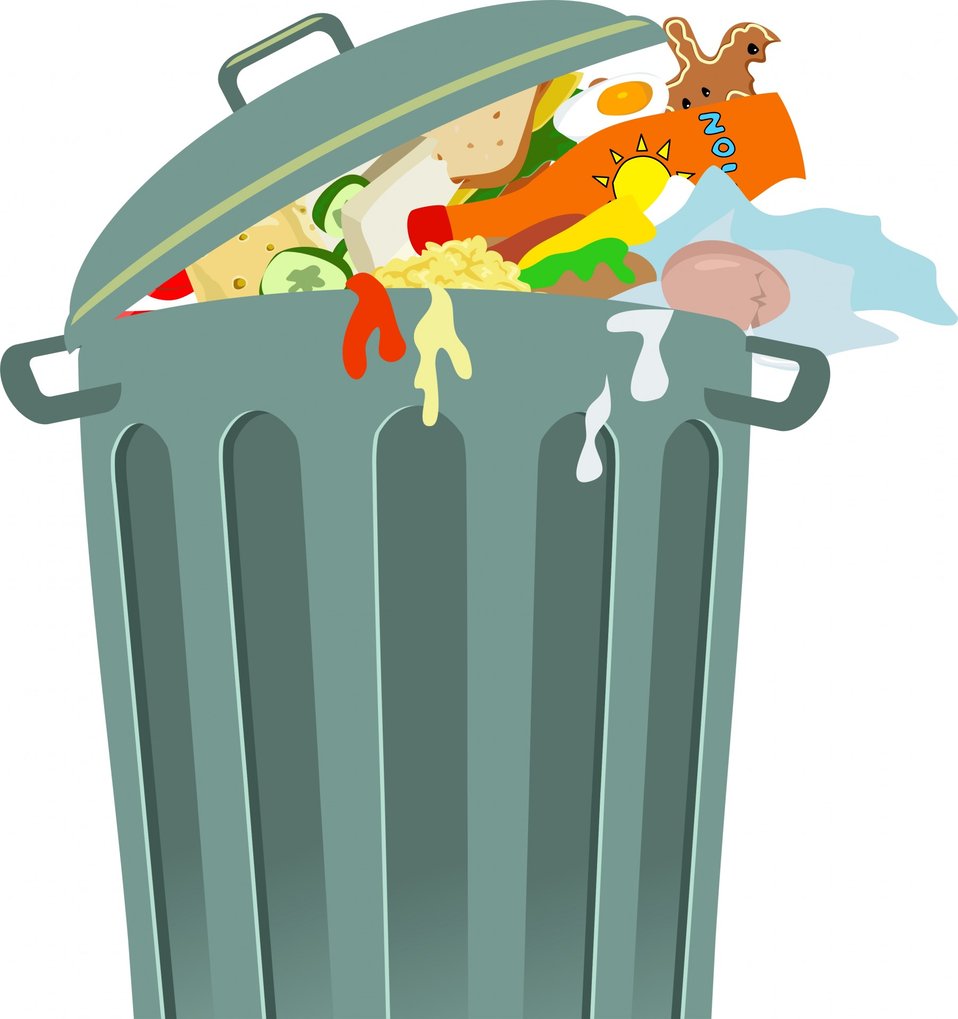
Trash can clip art

Digital illustration of a trash can overflowing with waste and rubbish..